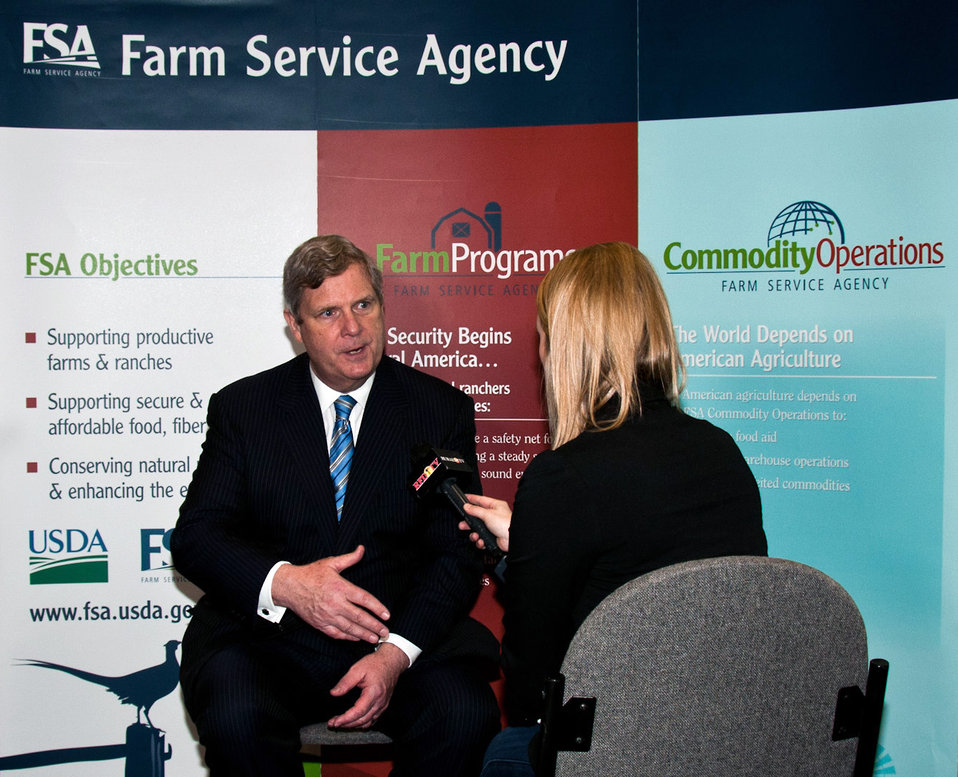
RFD TV interviews Agriculture Secretary Tom Vilsack at 2013 Commodity Classic in Kissimmee, FL on Friday, Mar. 1, 2013.